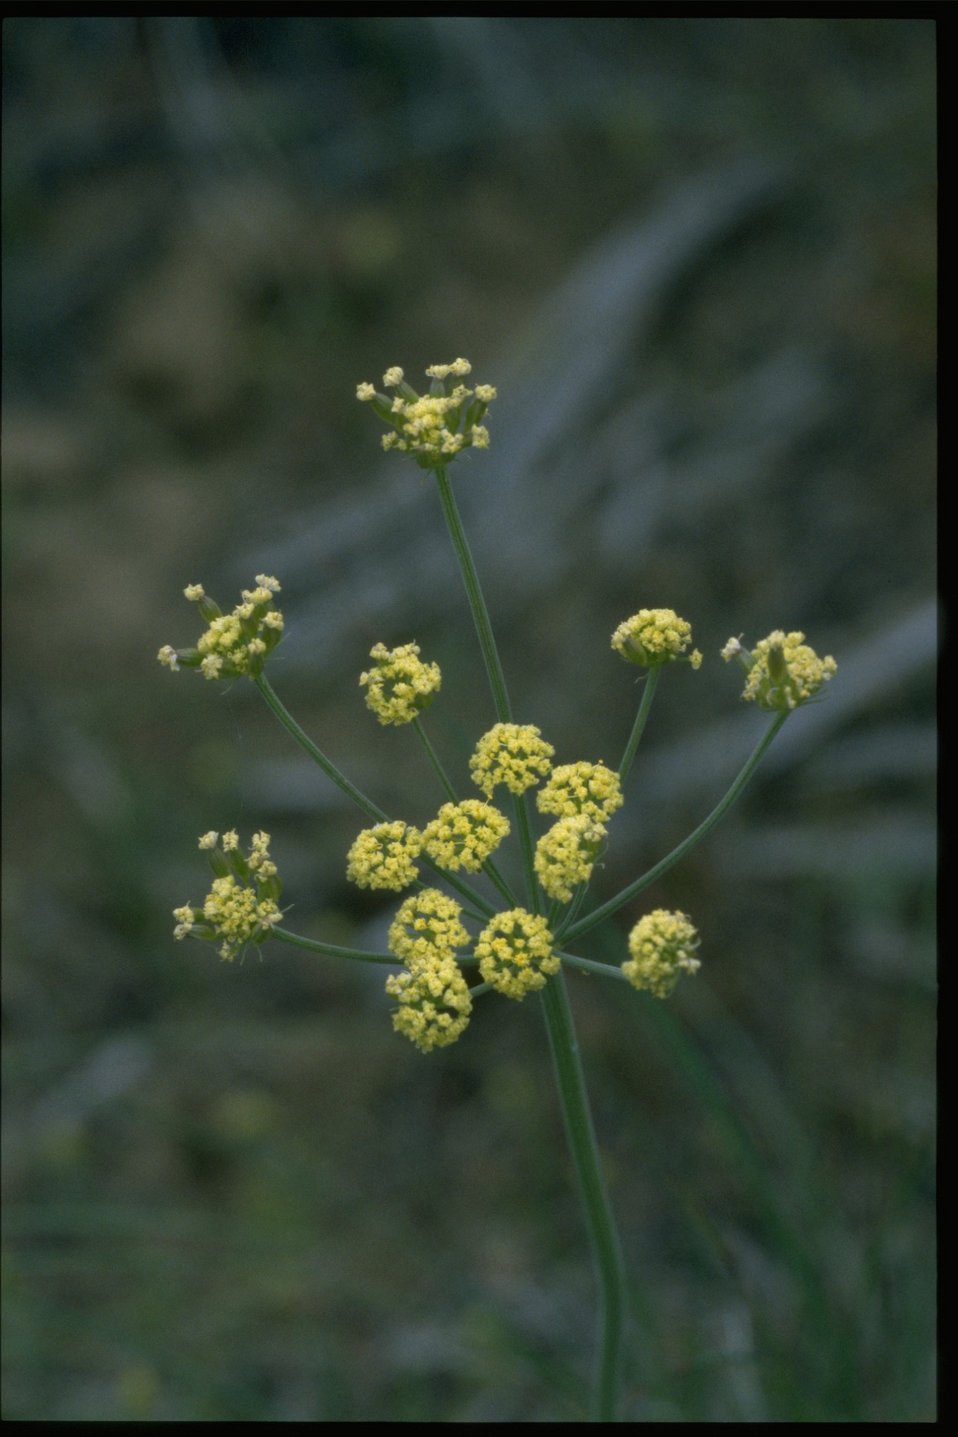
Medium shot of Sweet Fennel (Foeniculum vulgare).